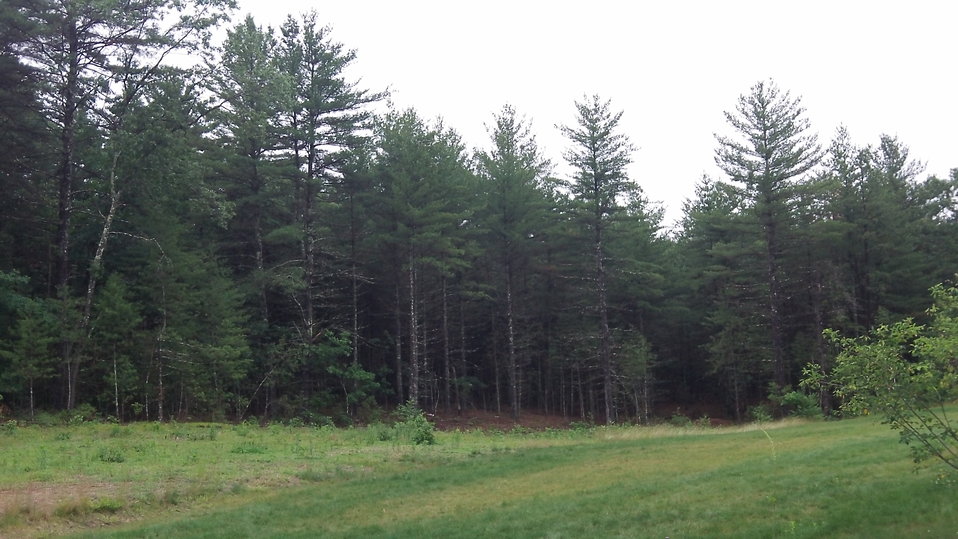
Assabet River National Wildlife Refuge, Sudbury, MA.